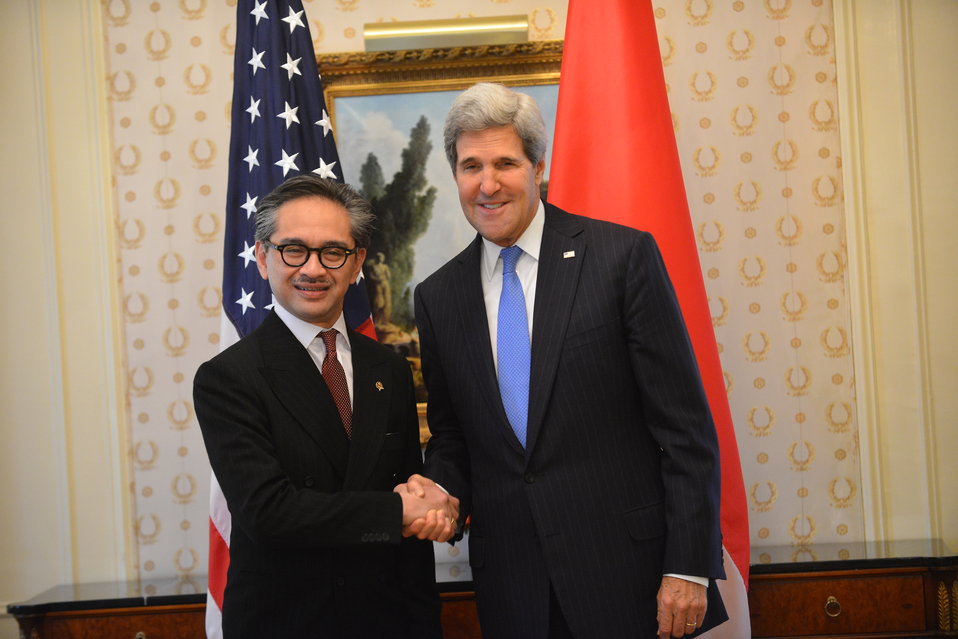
Secretary Kerry Meets With Indonesian Foreign Minister R.M. Marty Natalegawa

U.S. Secretary of State John Kerry meets with Indonesian Foreign Minister R.M. Marty Natalegawa in New York City on September 27, 2013.